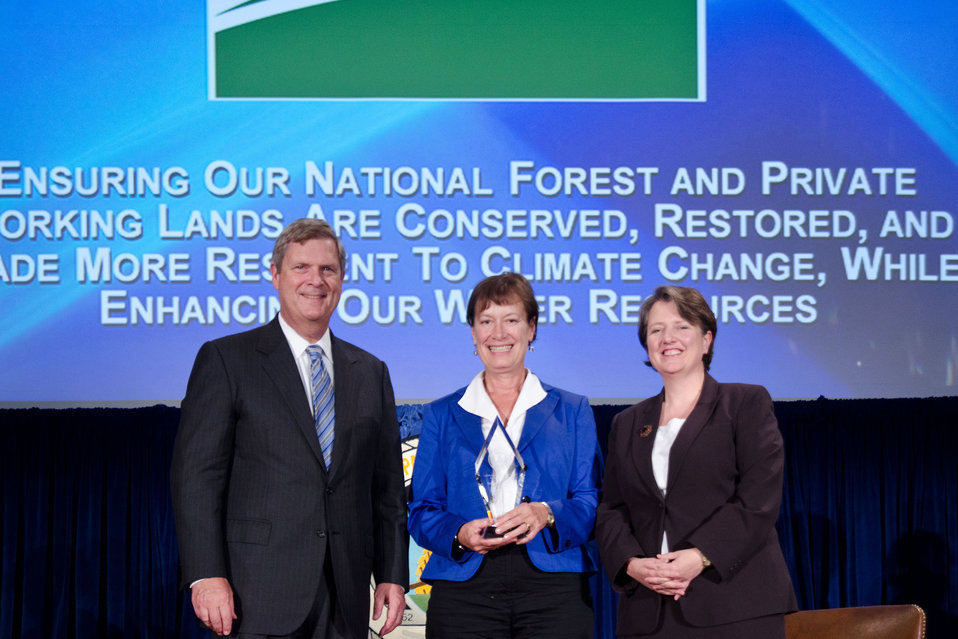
Agriculture Secretary Tom Vilsack (l) and Deputy Secretary Kathleen Merrigan (r), presents the Ensuring Our National Forests and Private Working Lands Are Conserved, Restored, and Made More Resilient To Climate Change, While Enhancing Our Water Resources Award to Tacoma hydropower Trial Team, Office of the General Counsel, Golden, CO. Lois G. Witte, Group Leader. For developing outstanding legal precedent of behalf of the Forest Service, in USDA’s first-ever administrative hearing under the Energy Policy Act of 2005. On Wednesday, September 14, 2011 in the Jefferson Auditorium at the US Department of Agriculture in Washington, DC.